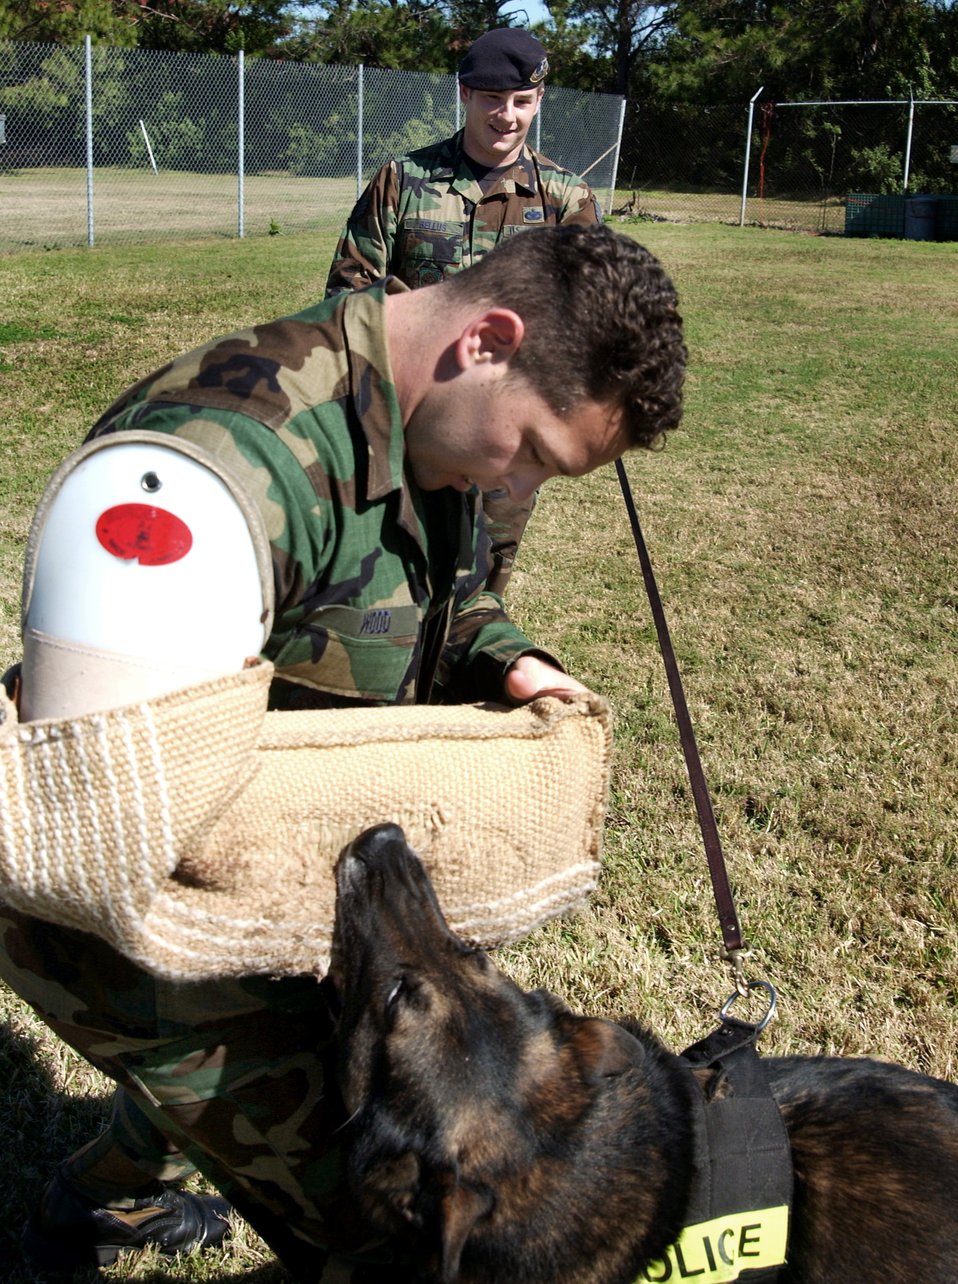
For the dogs

MACDILL AIR FORCE BASE, Fla. (AFPN) - Manzo, a military working dog, controls